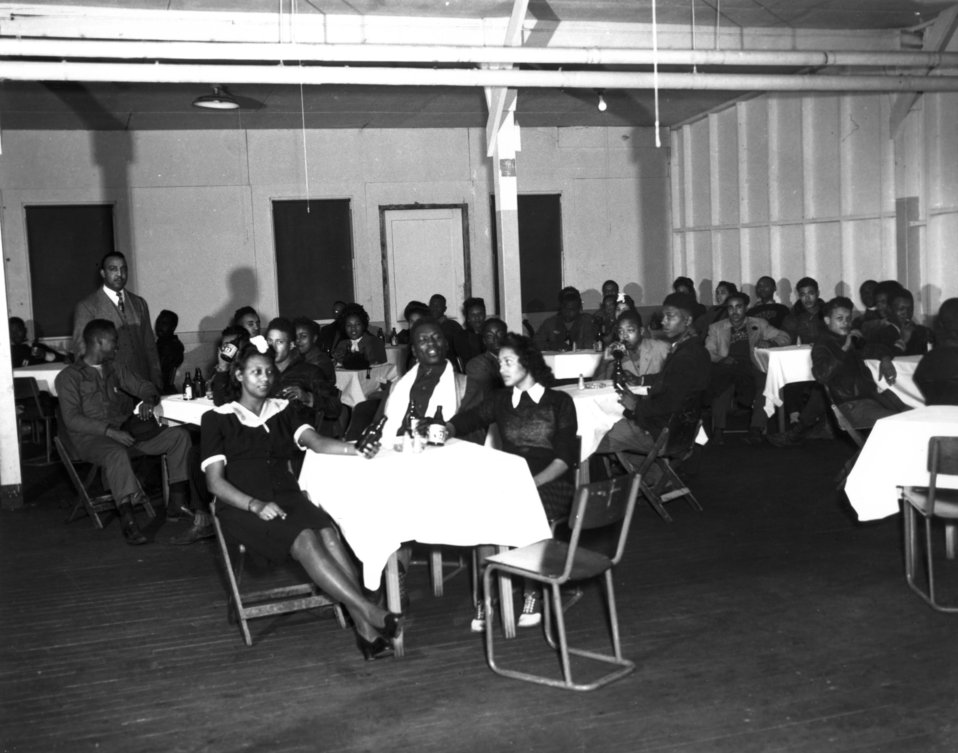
Recreation at Oak Ridge